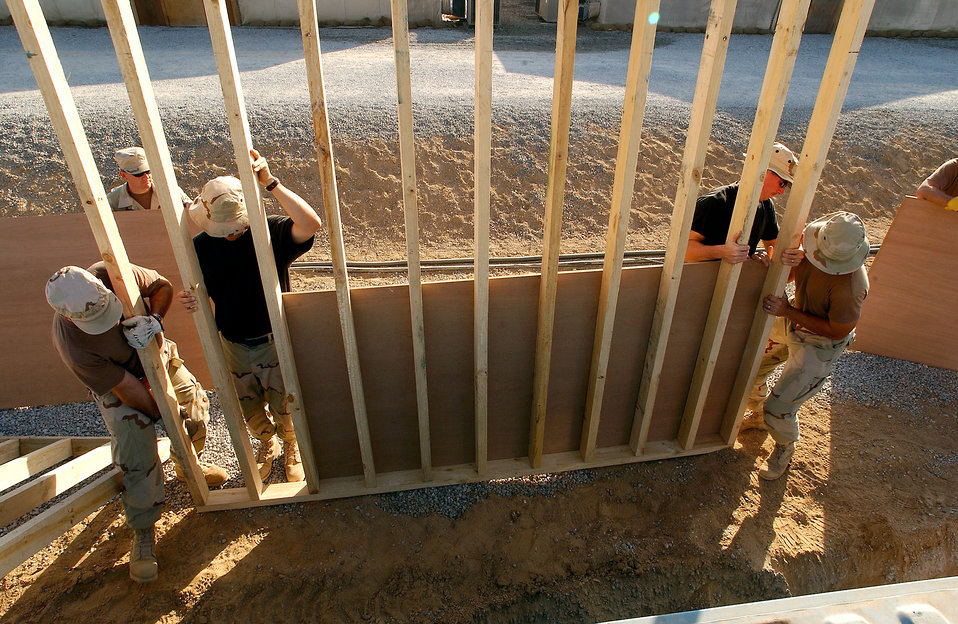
Bunker building

OPERATION ENDURING FREEDOM (AFPN) -- Members of the 320th Expeditionary Civil Engineer Squadron carry a 10-foot support wall for a protective bunker being constructed at a deployed location supporting Operation Enduring Freedom.